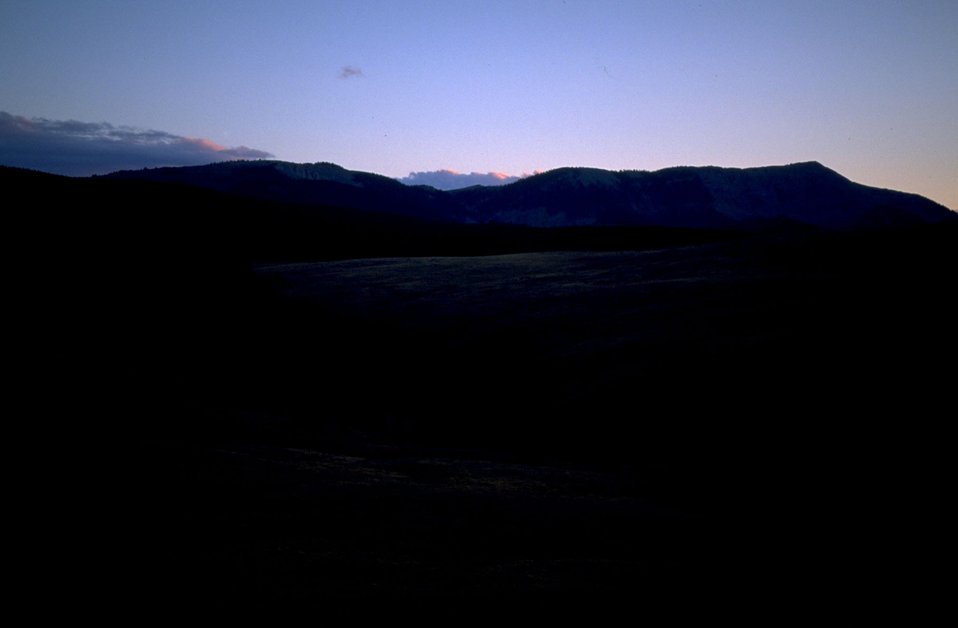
Silhouette of hills against the evening sky